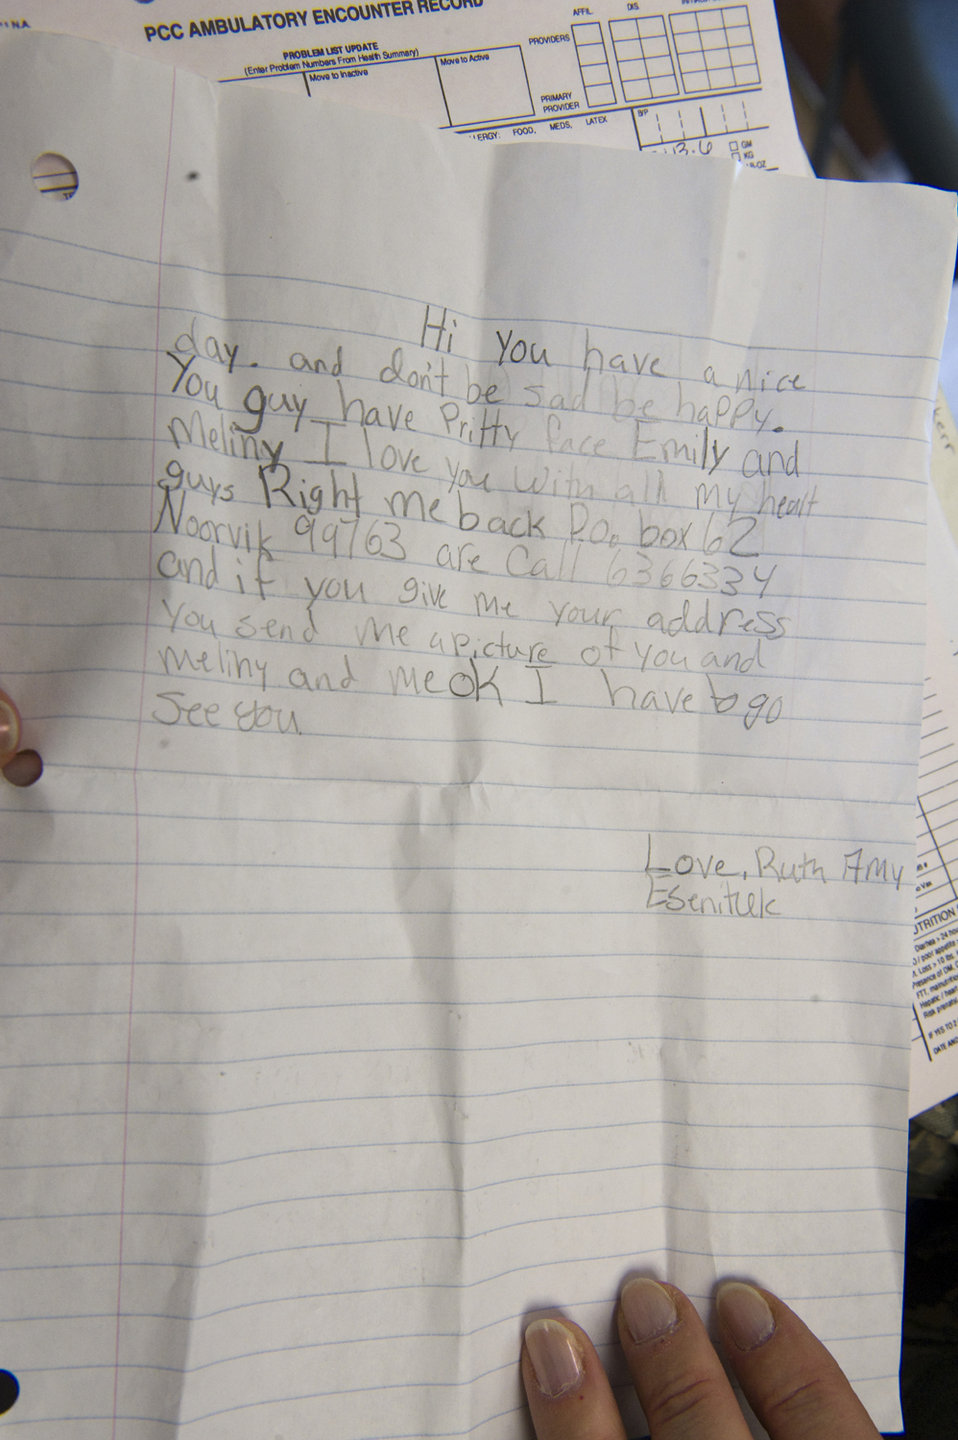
Operation Arctic Care

Maj. Emily Cerreta displays a letter 12-year-old Ruth Hay, one of Major Cerreta's patients, slipped into her pocket. Major Cerreta is a family nurse practitioner from the 433rd Airlift Wing at Lackland Air Force Base, Texas, and is in Alaska for Operation Arctic Care, a joint medical training exercise.